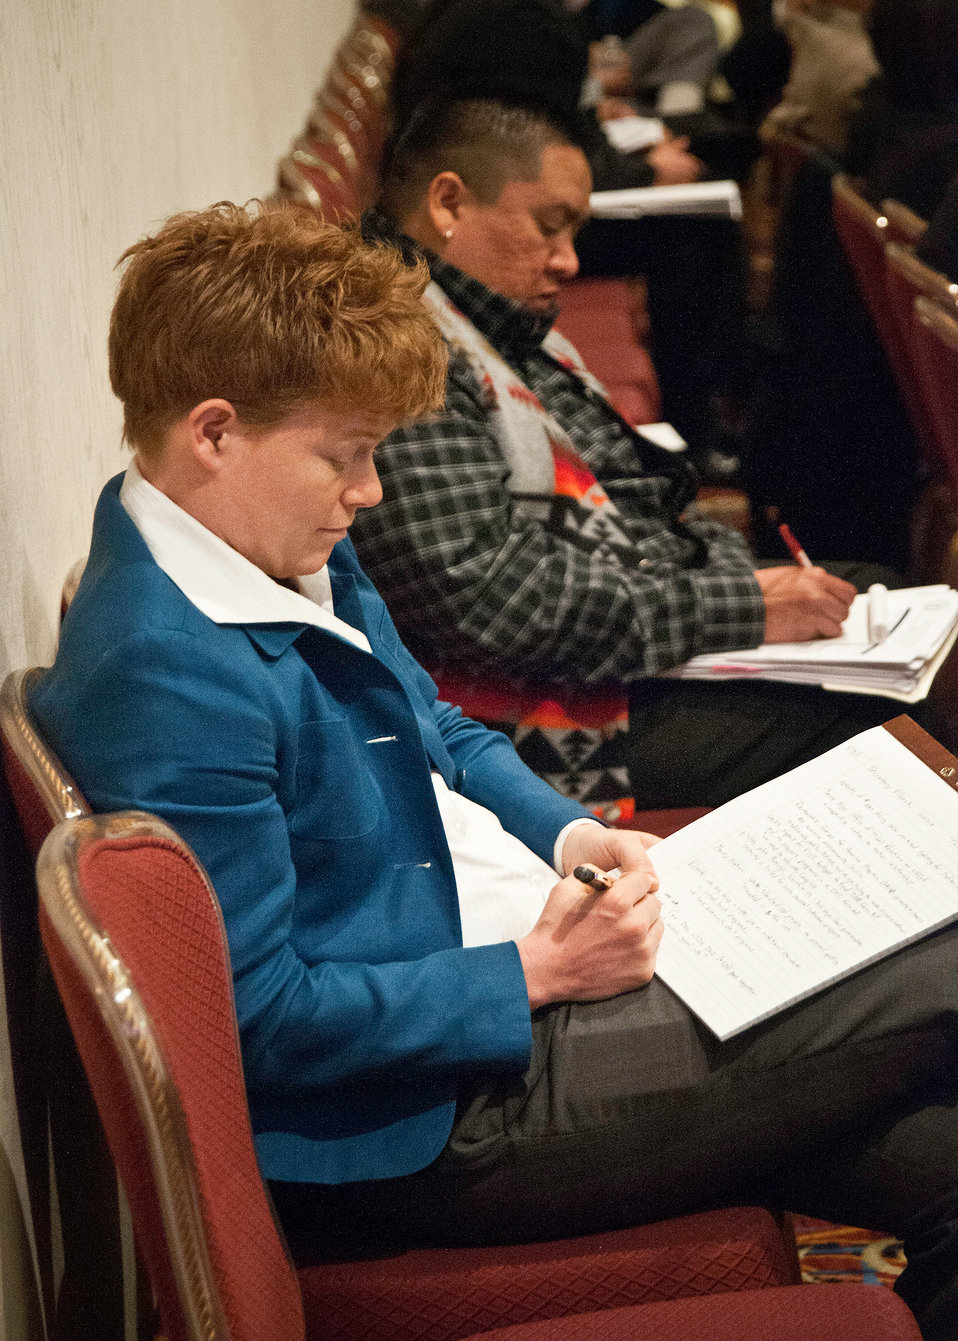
PhD, Senior Policy Advisor, Office of Policy and International Affairs, United States Department of Energy (DOE) Holmes Hummel and an engineer with the Tulalip Tribe in Tulalip, WA Dory Roan Horse take notes during Agriculture Secretary Tom Vilsack’s remarks at the United States Department of Energy (DOE) Tribal Summit with American Indian and Alaska Native Leaders in Washington, DC, on Wednesday, May 4, 2011. Secretary Vilsack discussed alternative energy, economic development and conservation programs available through the Department of Agriculture.